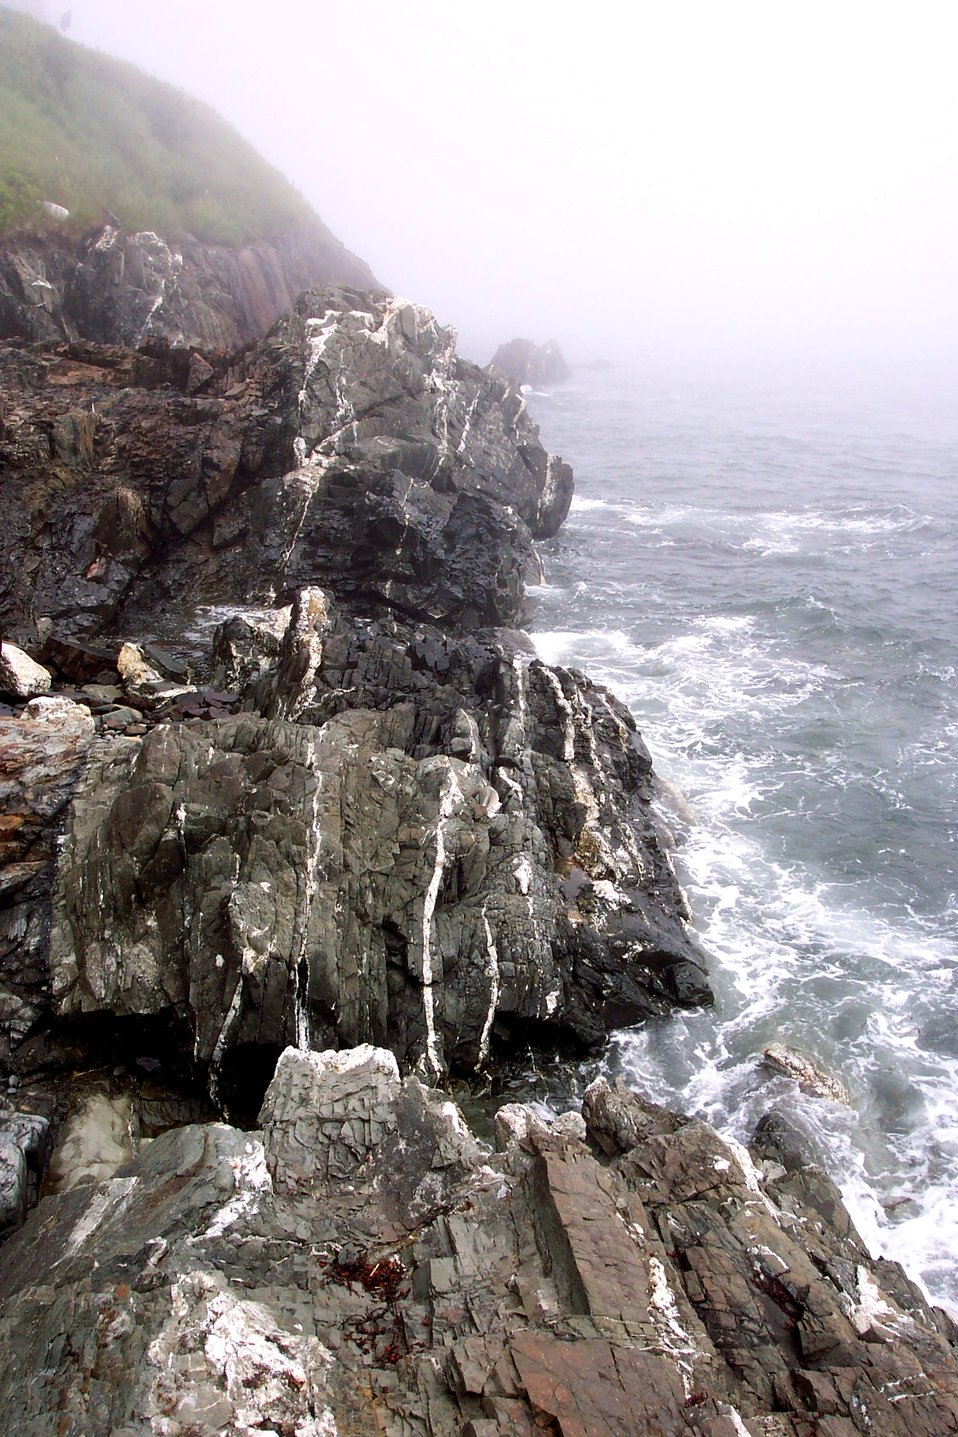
Quartz-veined metamorphic rocks below West Quoddy Head.